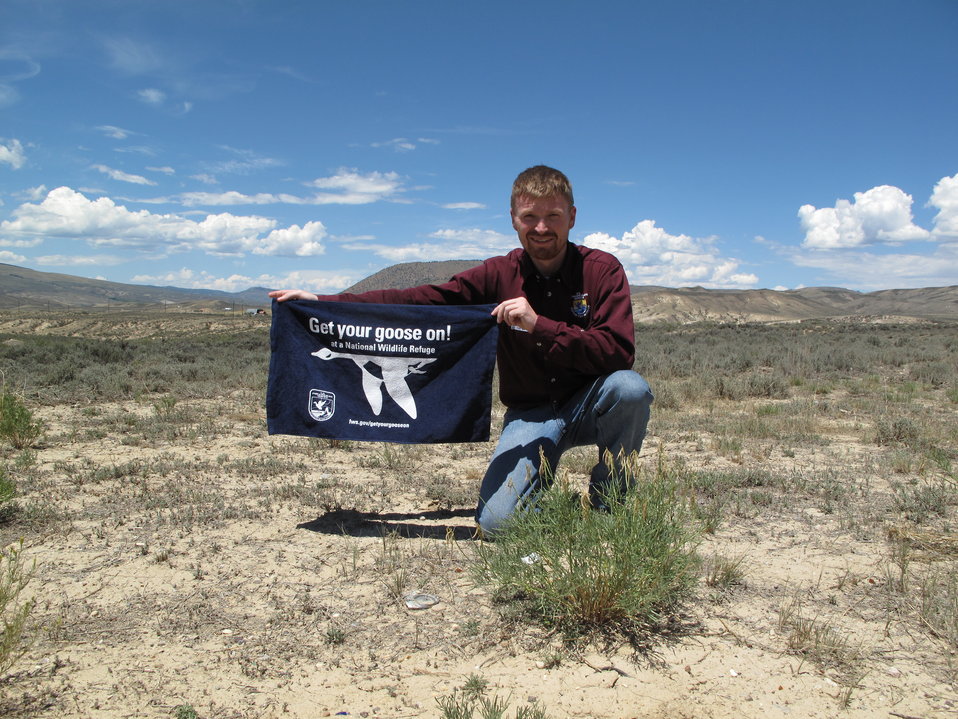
Regional Office employee with Osterhout Milkvetch

Mountain-Prairie Regional Office employee, Leith Edgar, holds up a “Get your Goose on!” towel in in front of the endangered Osterhout milkvetch plant (bit.ly/PWBd86), just east of Kremmling, Colo.